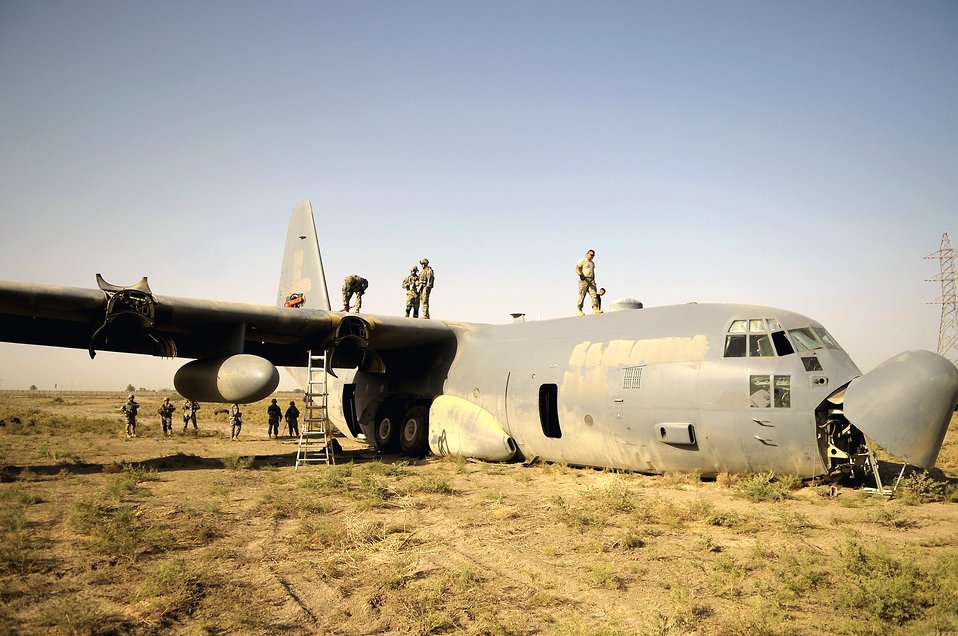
Iraqi Freedom

Maintenance and explosive ordnance disposal personnel from the 447th Air Expeditionary Group prepare to place explosive charges on the wings of a C-130 Hercules aircraft that are designed to divide the plane into smaller sections so it can be moved July 7 in Baghdad, Iraq. The C-130 made an emergency landing in a field north of the Baghdad International Airport shortly after take-off on June 27.